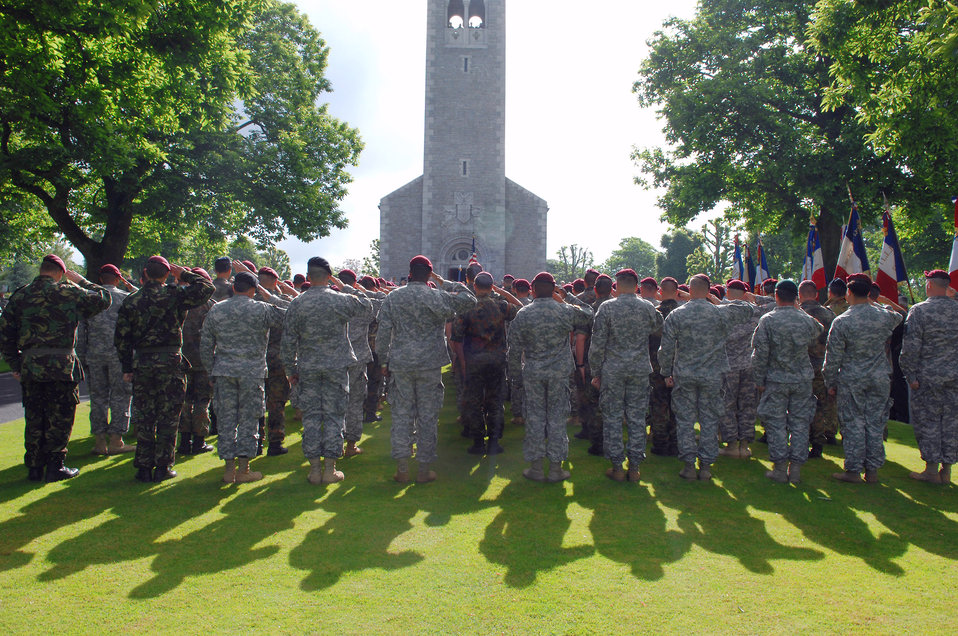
Remembering D-Day

Several hundred American Soldiers and Airmen paratroopers from the Southern European Task Force traveled from Vicenza, Italy, and British servicemembers pay their respects at the Brittany American Cemetery while participating in D-Day Ceremonies June 4 in Normandy, France. More than 4,000 American casualties of World War II are buried at this cemetery and memorial in St. James.